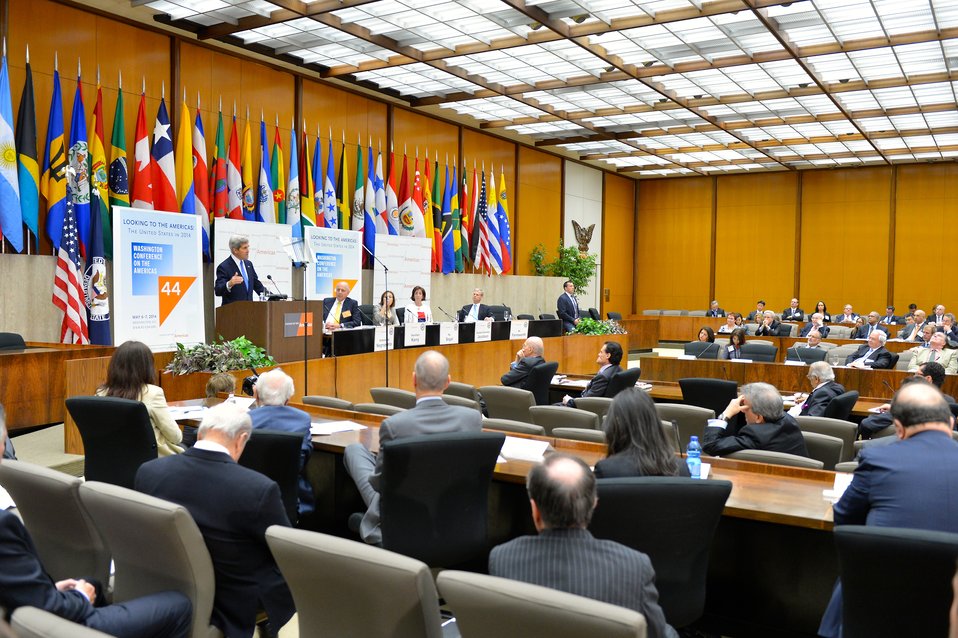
Secretary Kerry Delivers Remarks at the Council of the Americas' 44th Annual Conference on the Americas

U.S. Secretary of State John Kerry delivers remarks at the Council of the Americas' 44th Annual Conference on the Americas at the U.S. Department of State in Washington, D.C., on May 7, 2014.